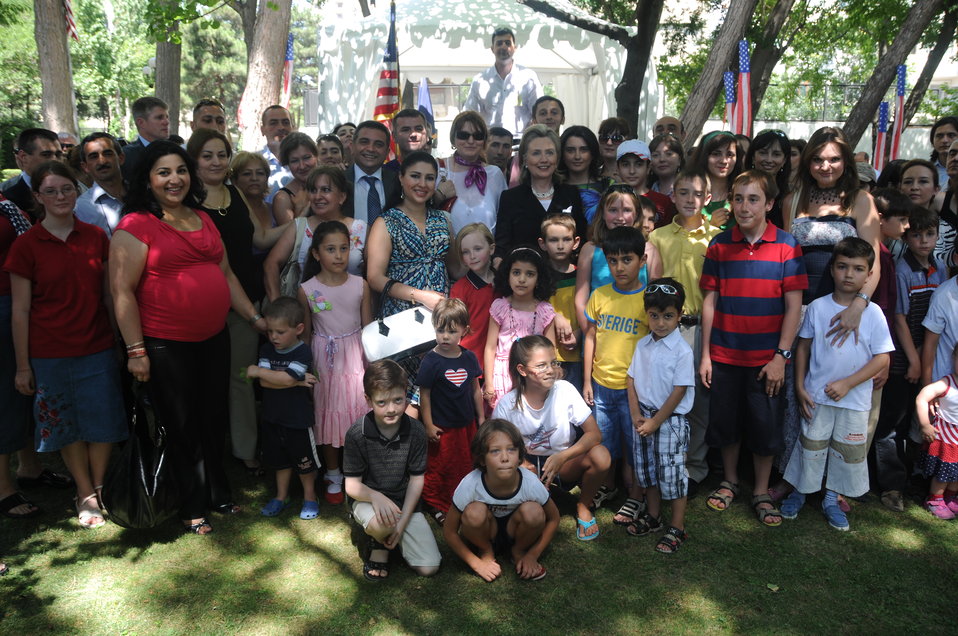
Secretary Clinton With U.S. Embassy Baku Staff

U.S. Secretary of State Hillary Rodham Clinton poses for a group photo with members of the U.S. Embassy Baku community in Baku, Azerbaijan, onJuly 4, 2010.